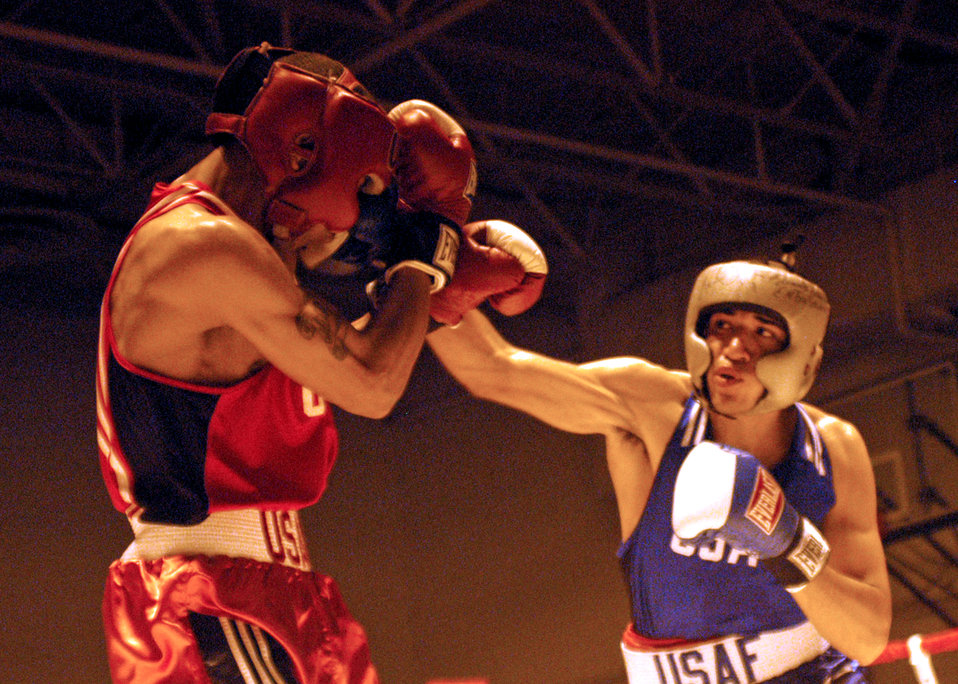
Bout time

LACKLAND AIR FORCE BASE, Texas -- Senior Airman Ramon Castro delivers a straight right hand to Senior Airman Michael Walker from Minot Air Force Base, N.D. Airman Castro, from Hurlburt Field, Fla., captured the 152-pound welterweight title.